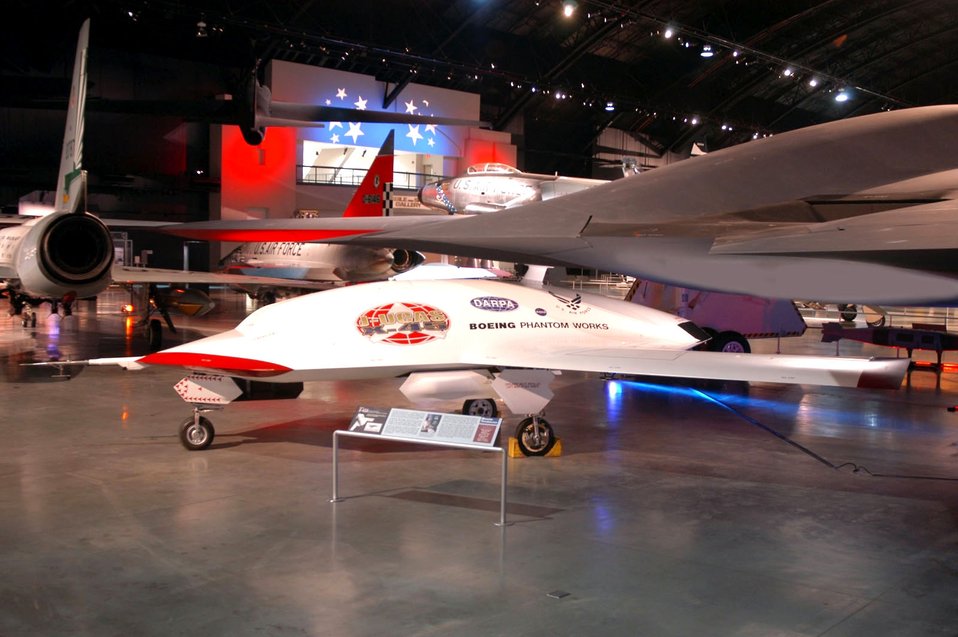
X-45A

The Boeing X-45A unmanned combat air vehicle is now on display in the Cold War Gallery at the National Museum of the U.S. Air Force in Springfield Pike, near Dayton, Ohio.